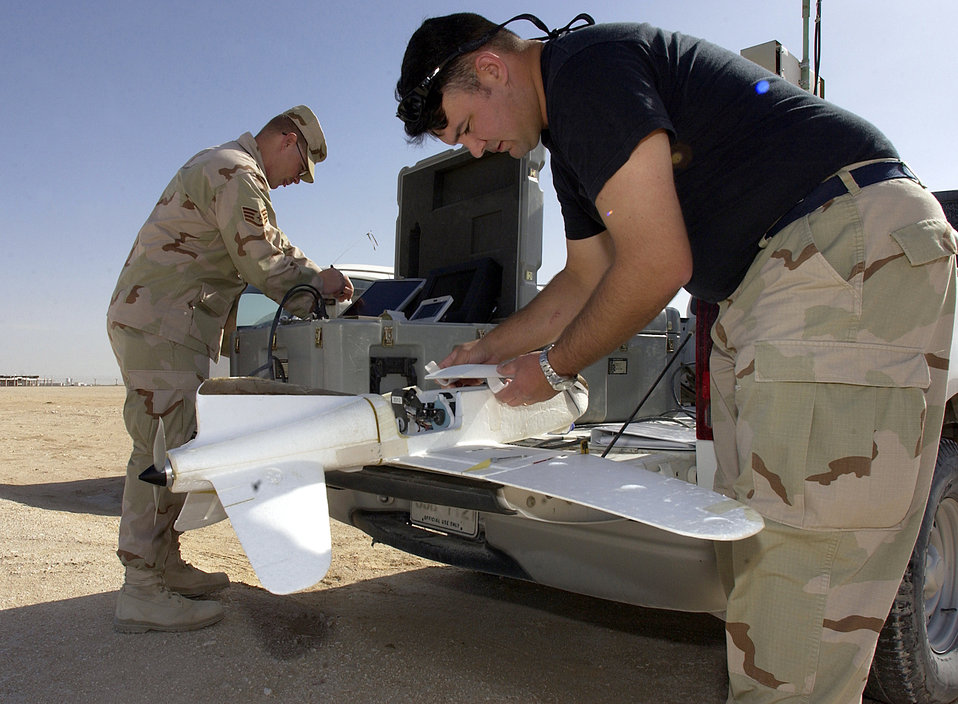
Getting ready to soar

SOUTHWEST ASIA -- Staff Sgts. Gerald Knapp (left) and Wayne Holliday prepare to launch the Desert Hawk surveillance system at a forward-deployed location here. The Desert Hawk is a 7-pound airplane equipped with a Global Positioning System and both day and night camera capabilities. The sergeants are assigned to the 379th Expeditionary Security Forces Squadron.